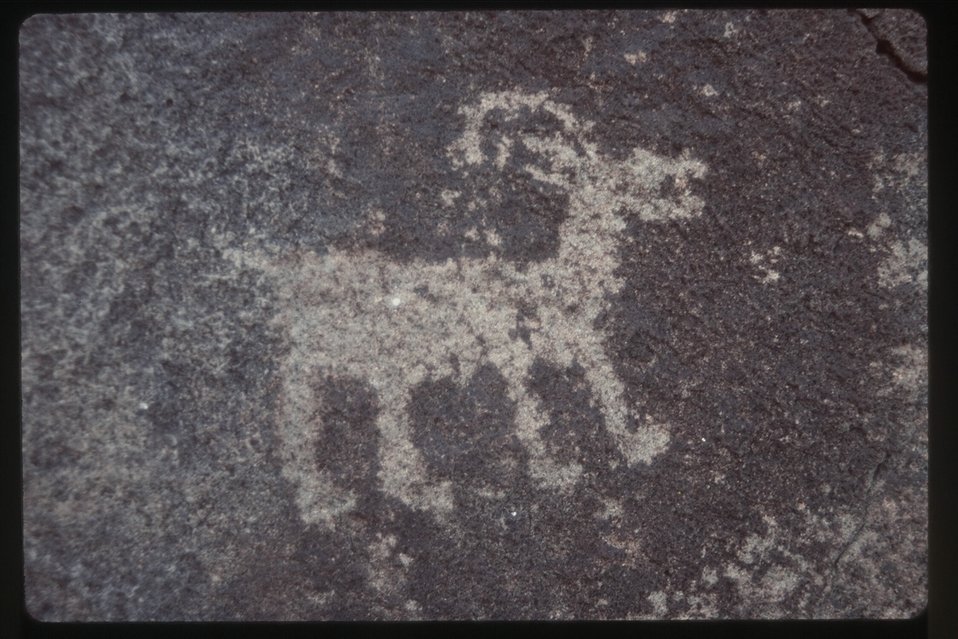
Petroglyphs (rock art) can be found on canyon walls throughout the 71,000-acre Agua Fria National Monument